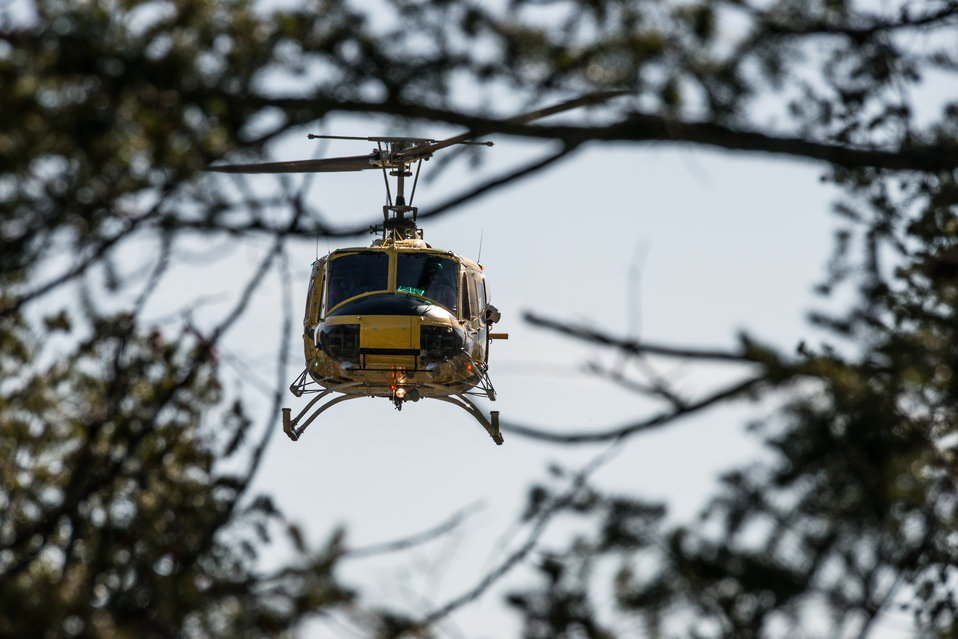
An Express's Bell 205A-1 Helicopter maintains altitude and position, both critical, for veteran wildland firefighter rappellers to descend to a landing zone in the Perreau Creek area, during the U.S. Department of Agriculture (USDA), U.S. Forest Service (USFS) National Helicopter Rappel Program’s Rappel Academy at Salmon Air Base, in Salmon, Idaho, on Thursday, May 15, 2014.